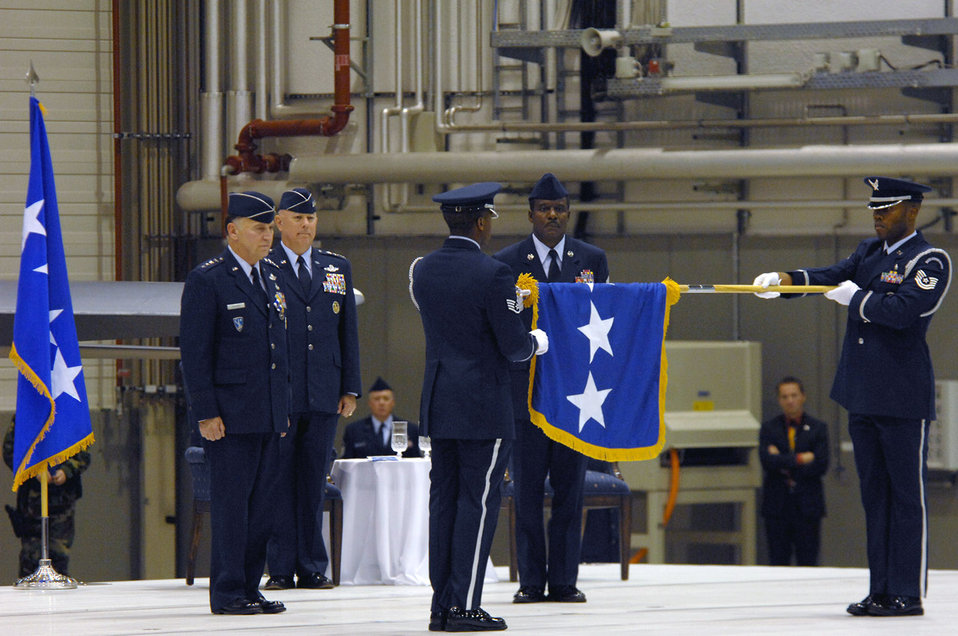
USAFE Commander retires after 38 years of service

Air Force Chief of Staff Gen. T. Michael Moseley, U.S. Air Forces in Europe Commander, Gen. William T. Hobbins, and Command Chief Master Sgt. Gary Coleman watch as the Ramstein Honor Guard retires General Hobbins' flag during his retirement ceremony Ramstein Air Base, Germany, Dec. 10.